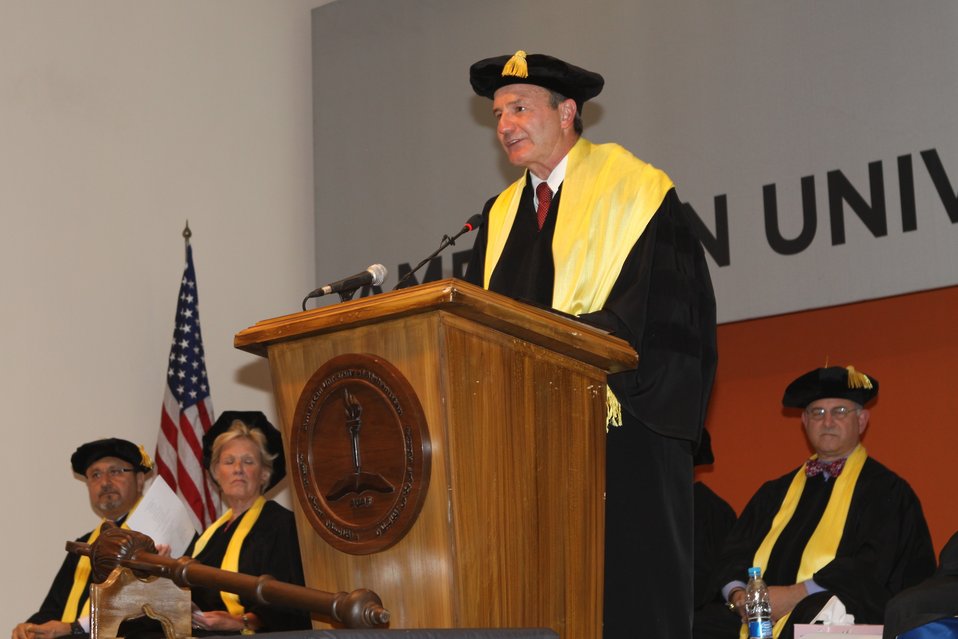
100526 AUAF Graduation 209